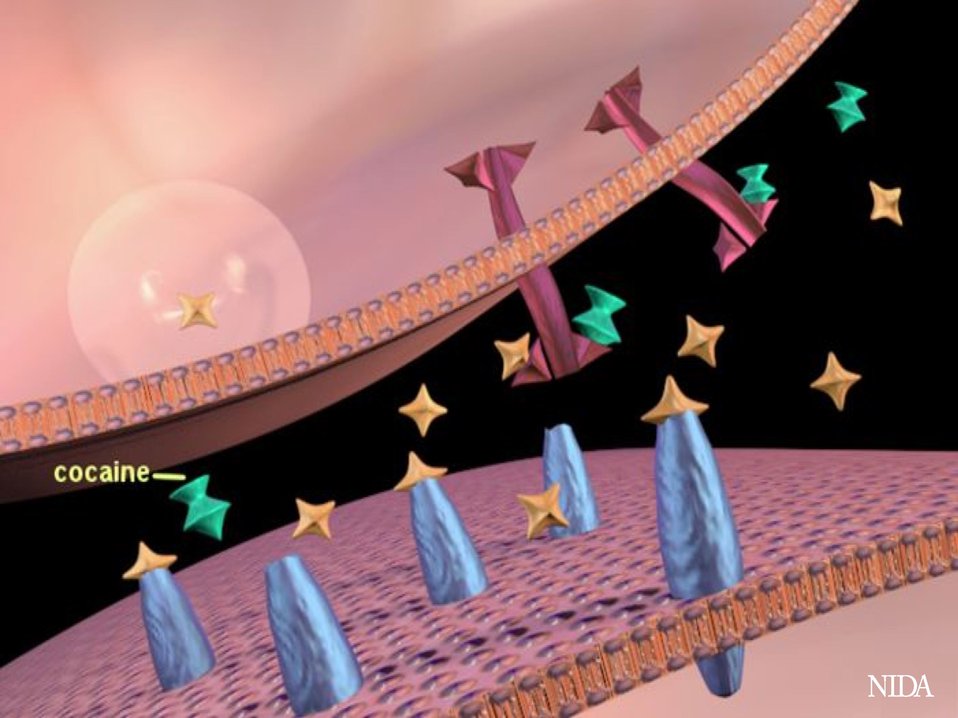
Neurotransmitters

Cocaine uptake alters activity in the synapse.